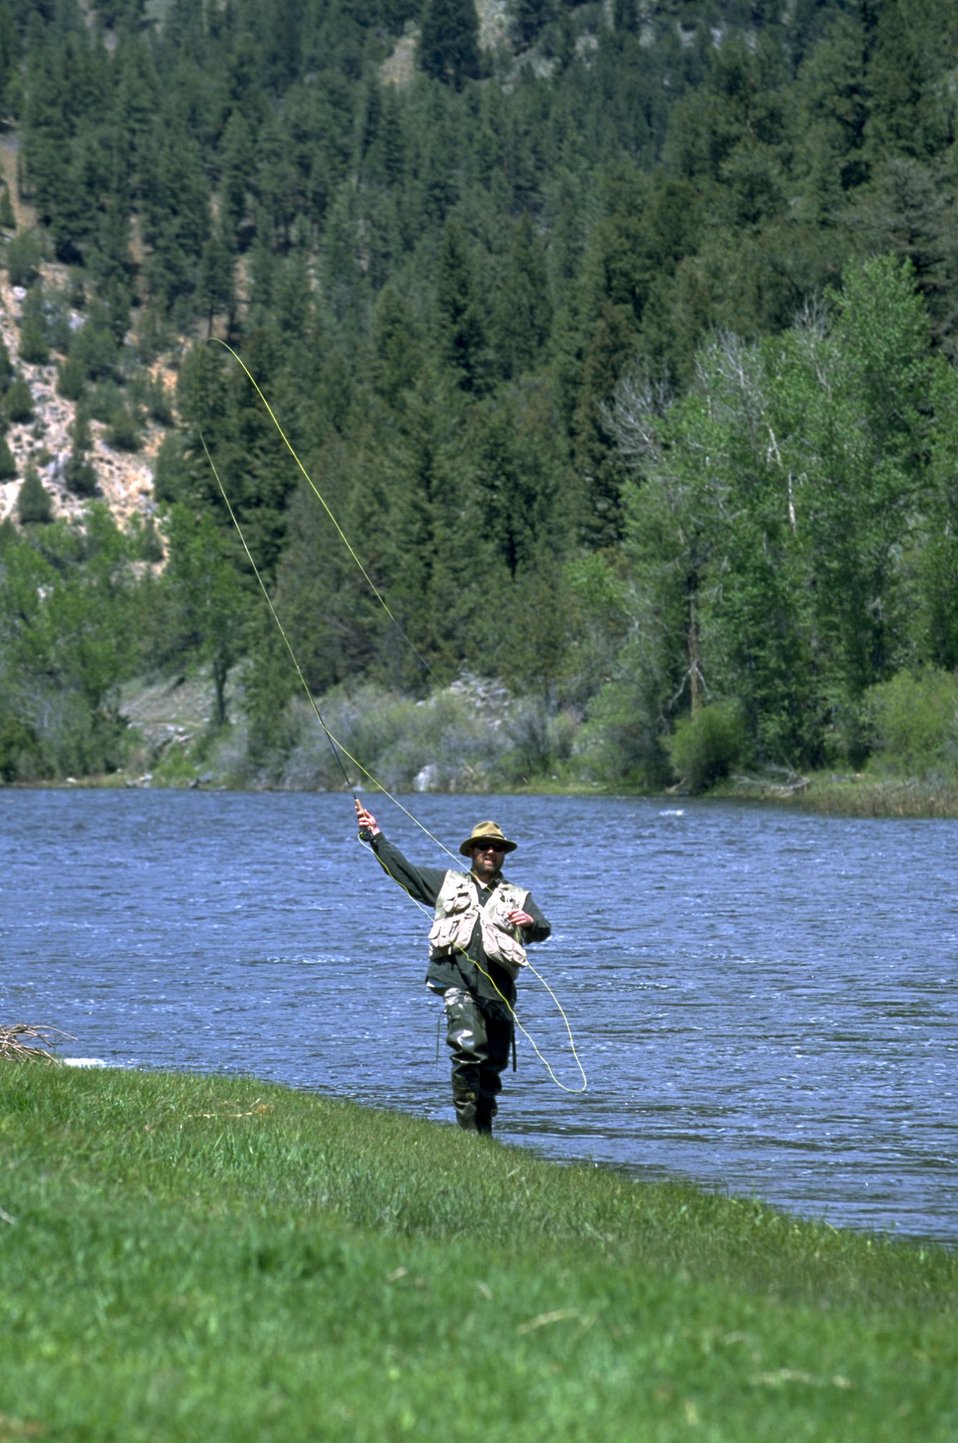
Fly fisherman on the Big Hole